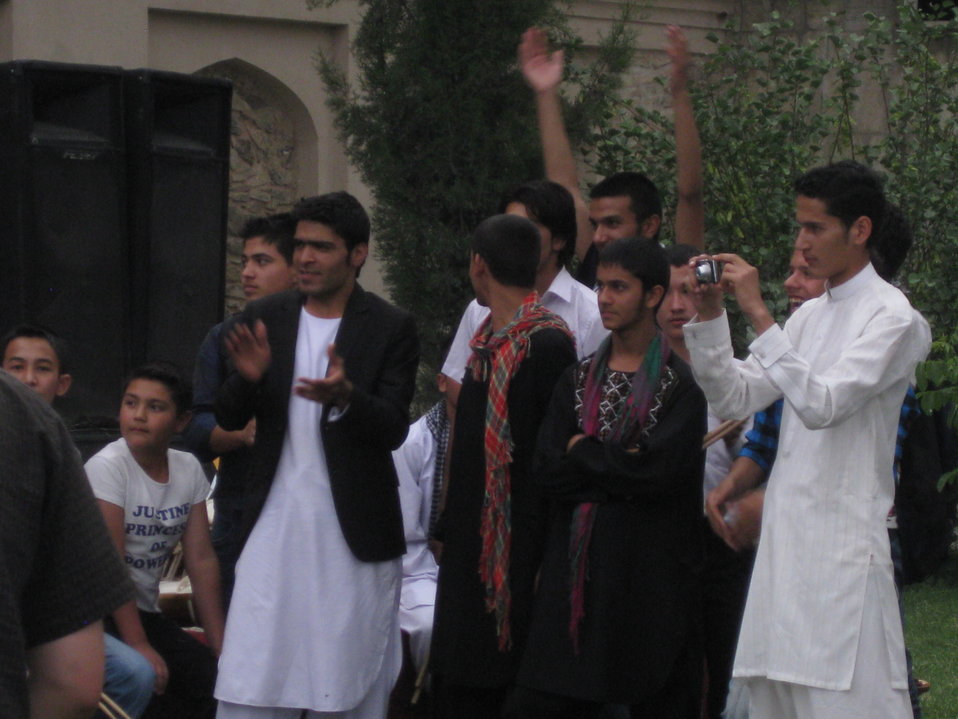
Afghan Youth Voices 105